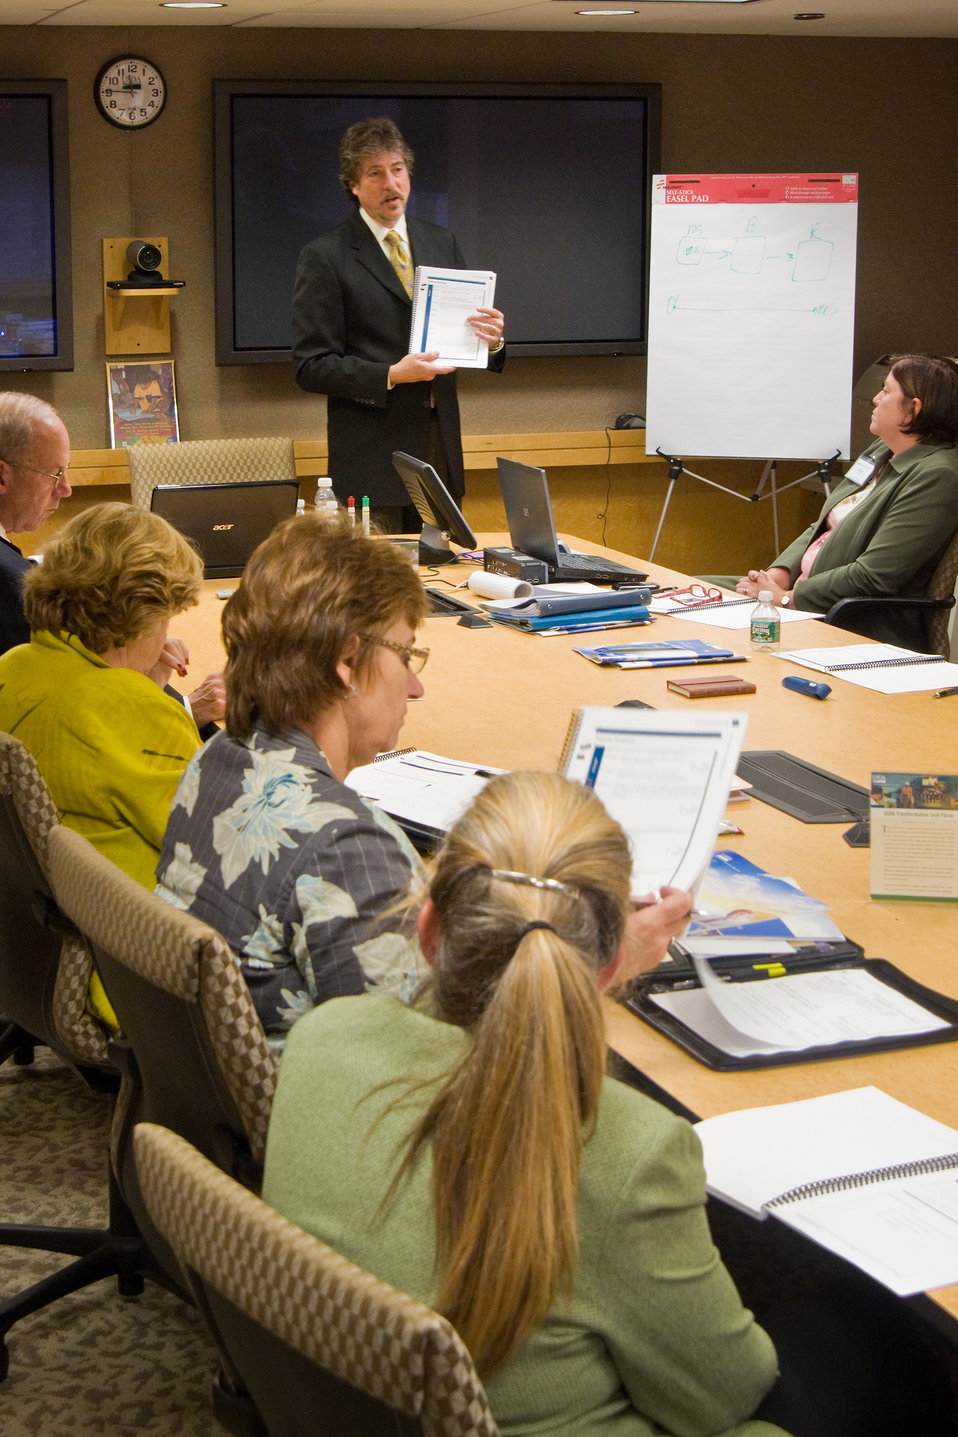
Chris Hardjing, Innovations International facilitating a meeting of Department of Agriculture employees during a session of the Secretary's Transformational Training in Washington, DC, Wednesday, August 25, 2010. The Transformational Training is for Department of Agriculture executives, managers and employees to help improve the civil rights of clients and employees. USDA Photo 10di1473-06 by Bob Nichols.